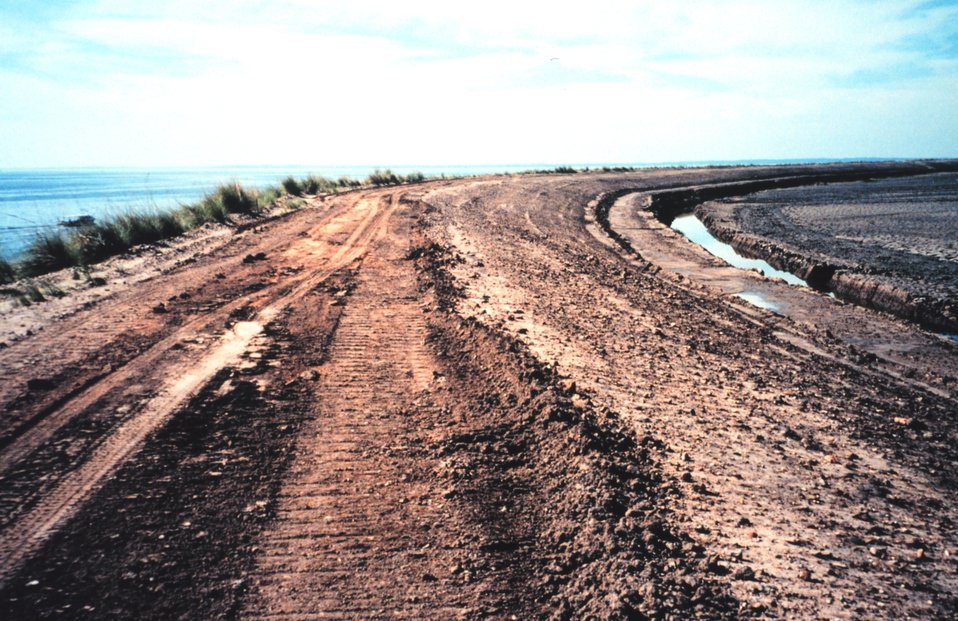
Hart-Miller Island, once two islands that nearly eroded into extinction, are now one. They are being regenerated and enlarged with dredge spoils from Baltimore Harbor.